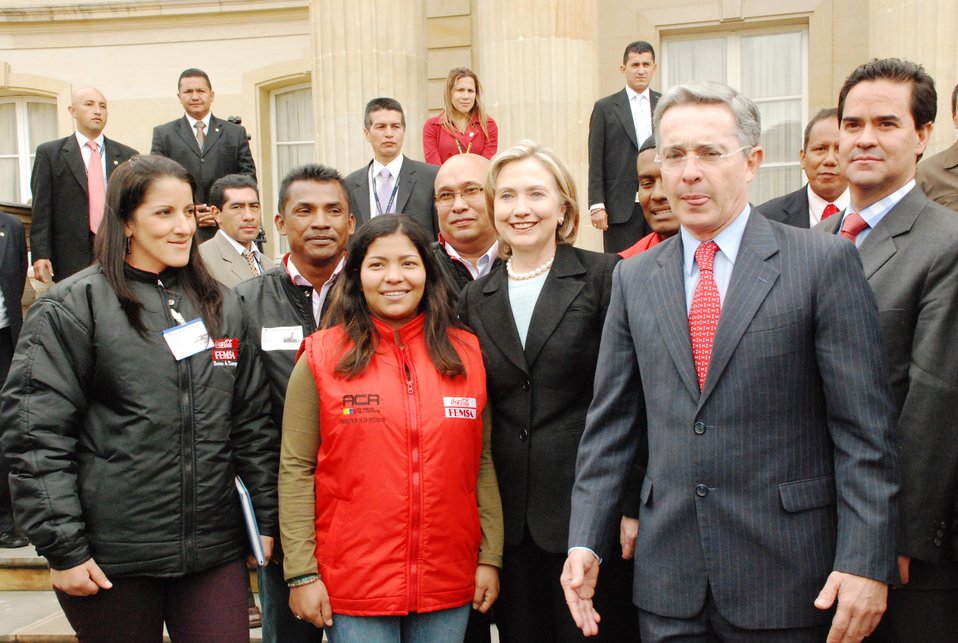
Secretary Clinton and President Uribe Meet With Former Rebels

U.S Secretary of State Hillary Rodham Clinton and Colombian President President Álvaro Uribe are greeted by a group of former rebels in the Armas Plaza at Casa de Nariño in Bogotá, Colombia June 9, 2010.